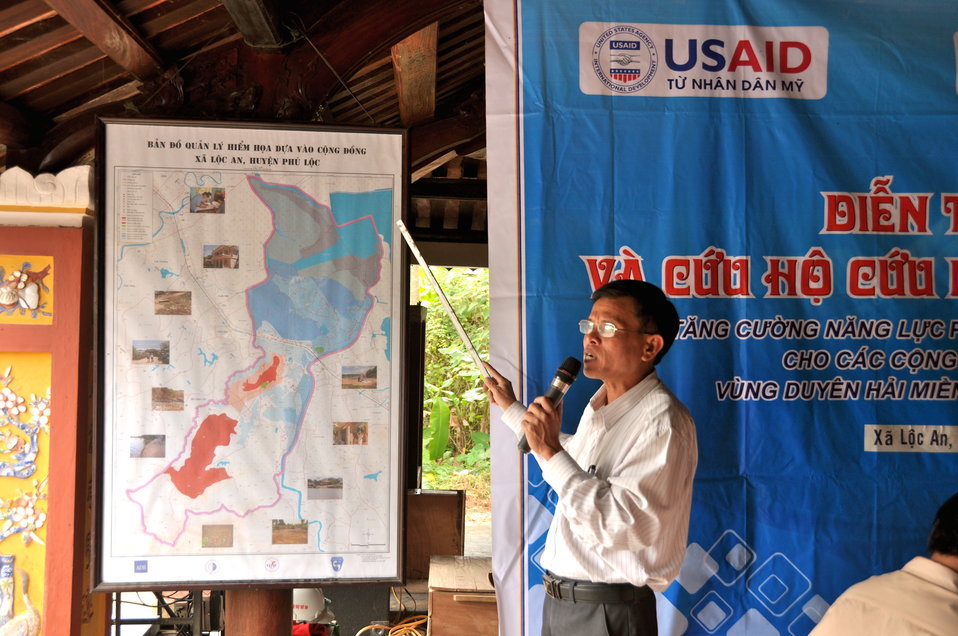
USAID and Save the Children support community evacuation drill and emergency preparedness in central Vietnam

Loc An Commune, Phu Loc District, Thua Thien Hue Province
December 4, 2012, Photo: Richard Nyberg, @USAIDVietnam